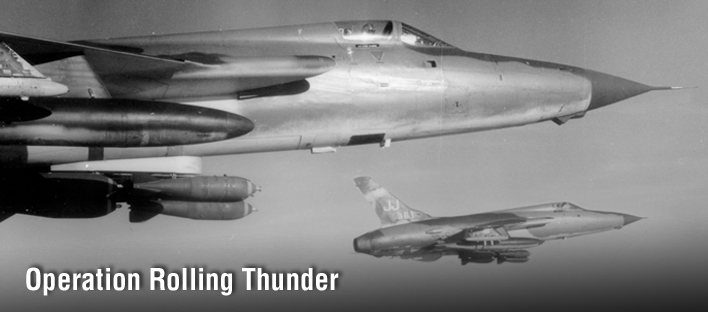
Operation Rolling Thunder, history spotlight graphic, U.S.